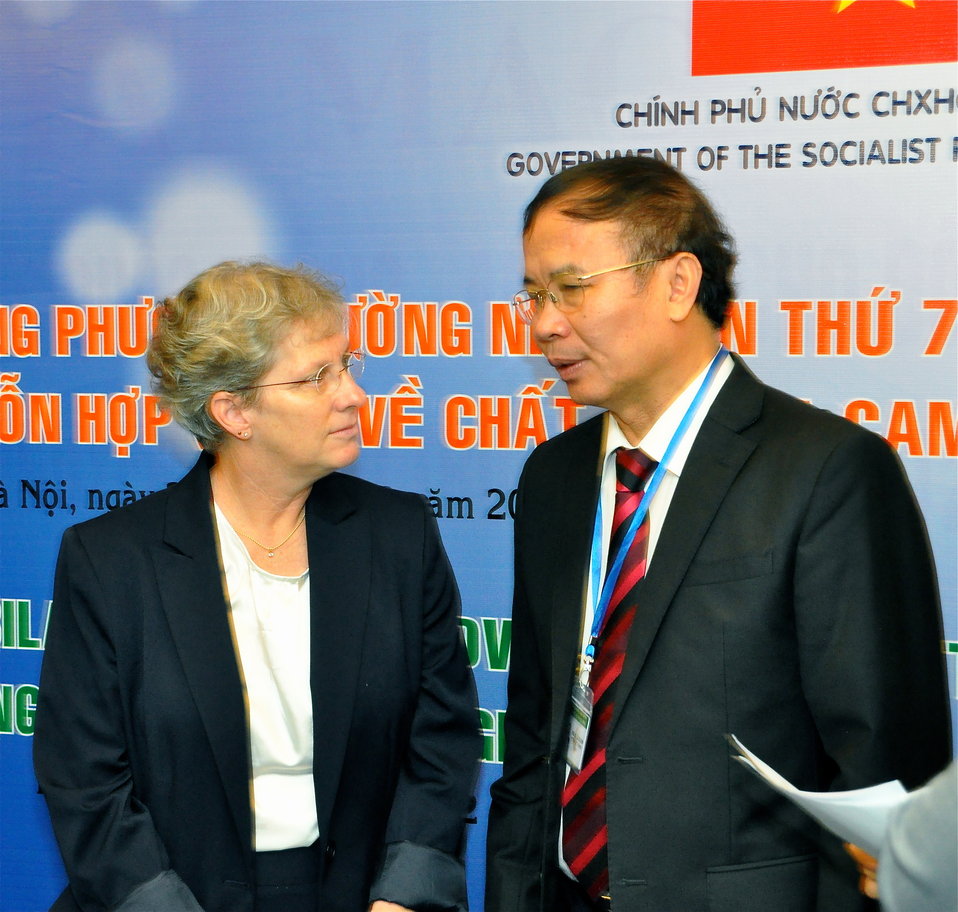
Meeting Co-Chairs Jennifer Orme-Zavaleta and Dr. Le Ke Son at the Seventh U.S.-Vietnam Advisory Committee Meeting (JAC)

Hanoi, September 20, 2012